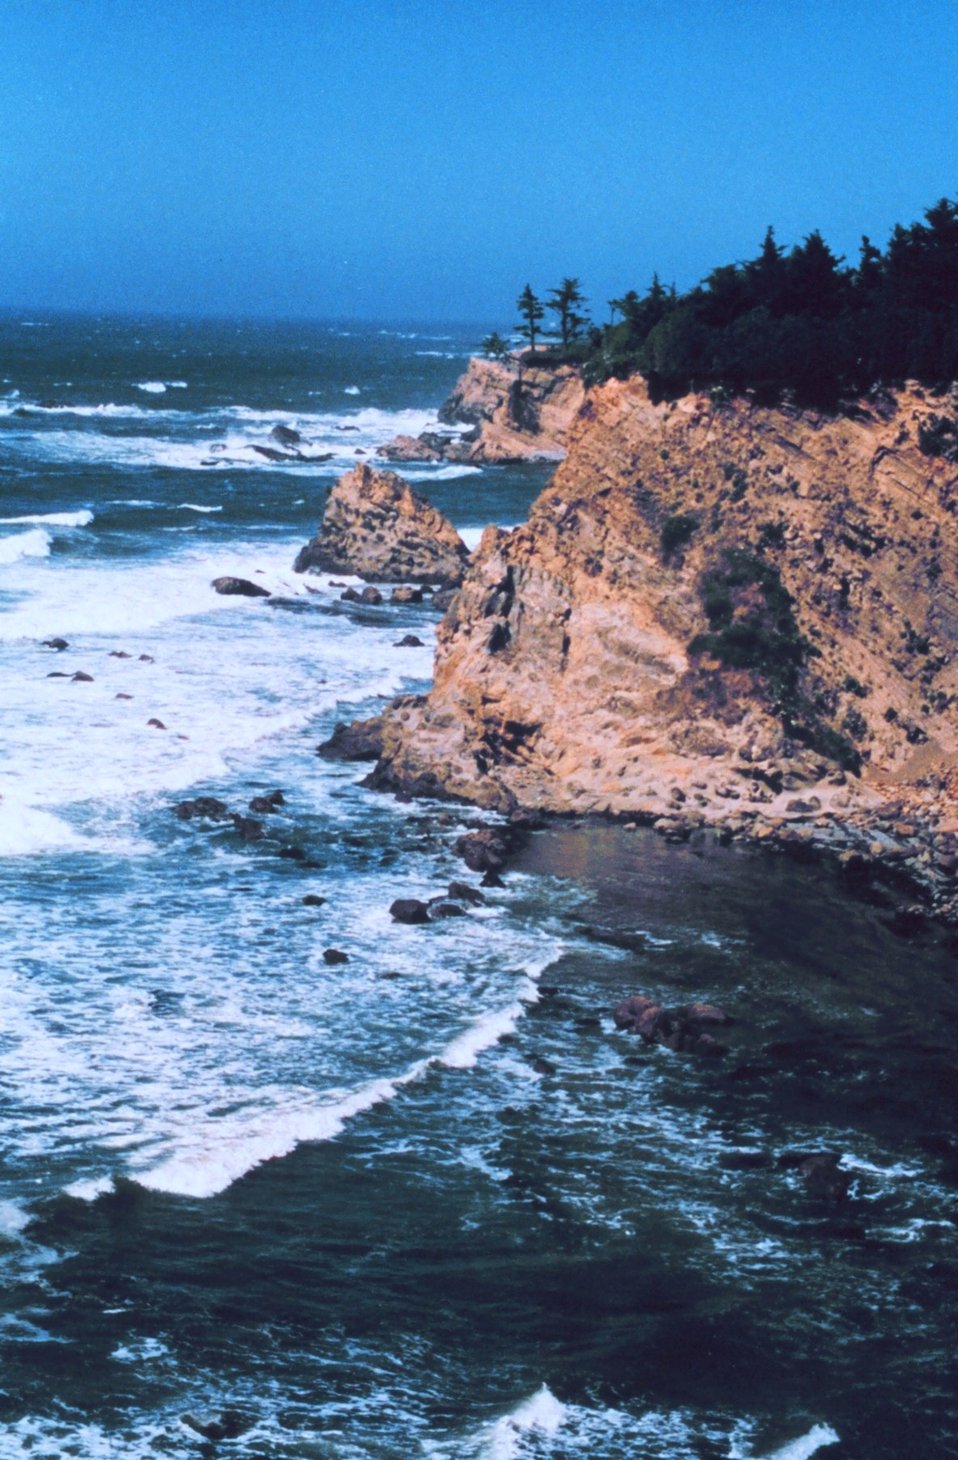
Near Shore Acres State Park, west of Coos Bay.